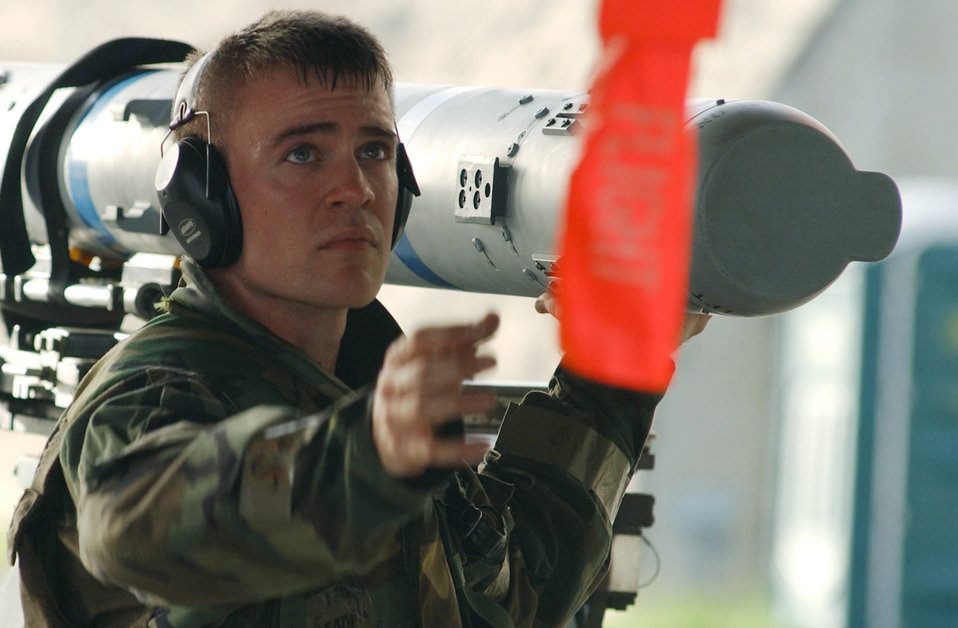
Guiding missiles

KADENA AIR BASE, Japan -- Staff Sgt. John Sefranek guides a missile into place during an exercise here. Sergeant Sefranek is assigned to the 18th Aircraft Maintenance Squadron.